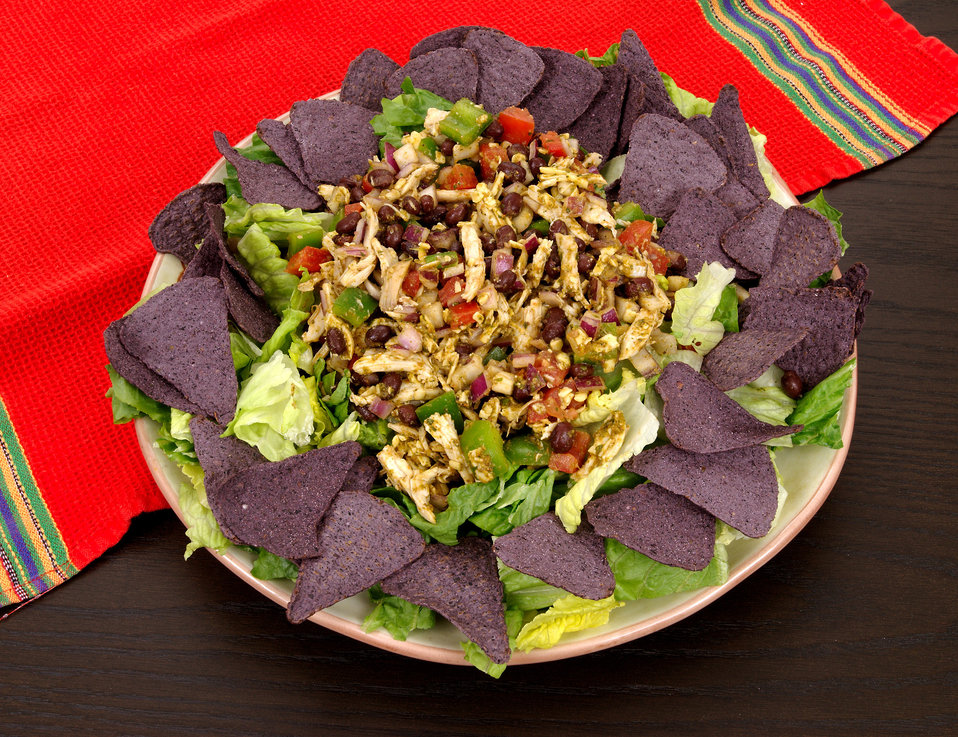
This photograph depicts a mixed greens salad topped with a colorful chicken salad, which included cranberries, tomatoes, and onions, and blue corn tortilla chips, giving it a Mexican-style appearance.